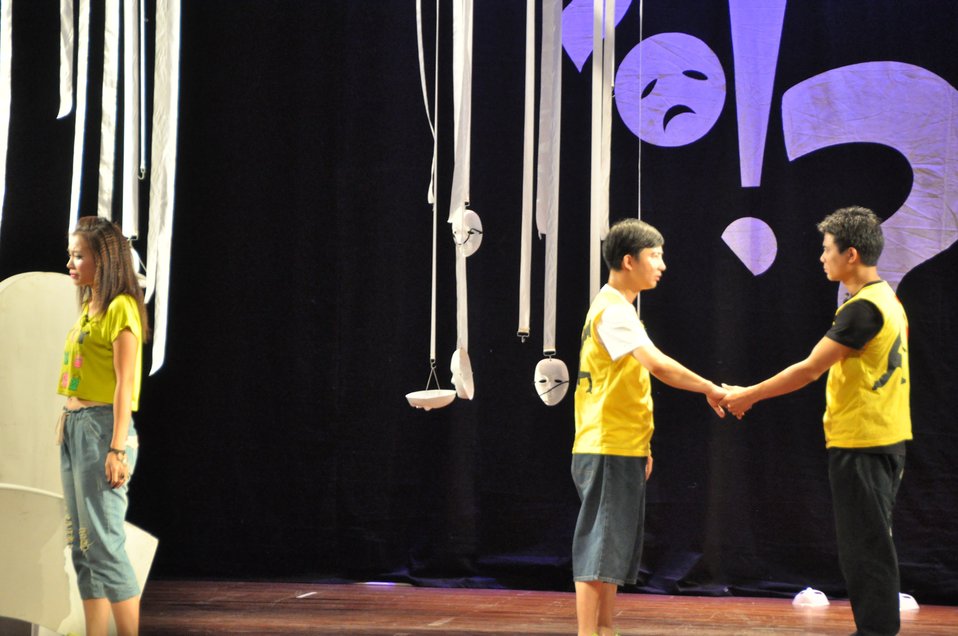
PEPFAR Musical Questions and Exclamations

Hanoi, May 17, 2013